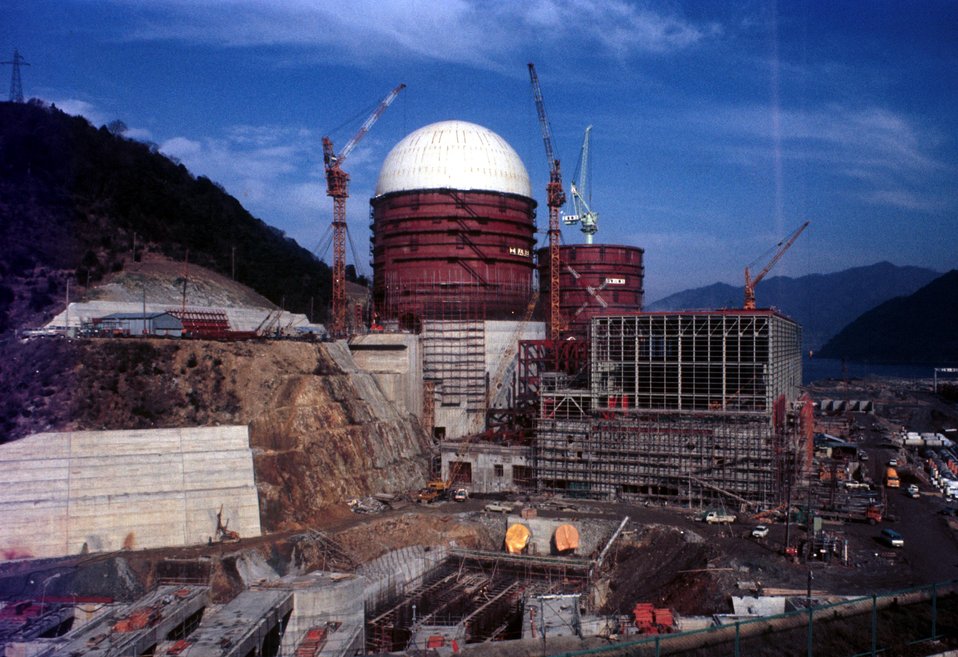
Japan, #1, Mihama. Construction of Kansai Elec. Co. 345MW Westinghouse Pwr. at Mihama, Japan. c. 1967